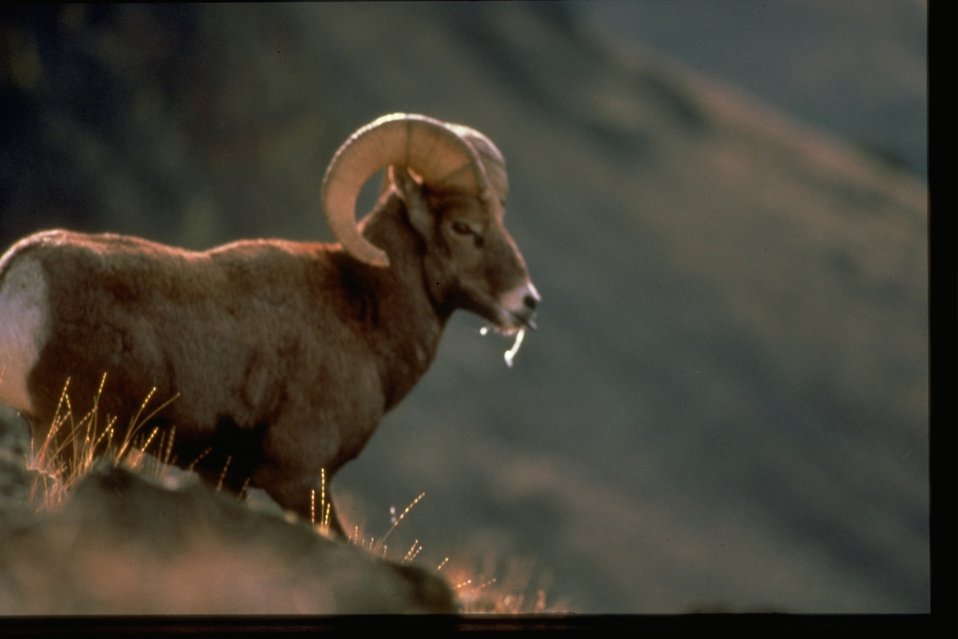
A Bighorn Sheep with grass in its mouth.